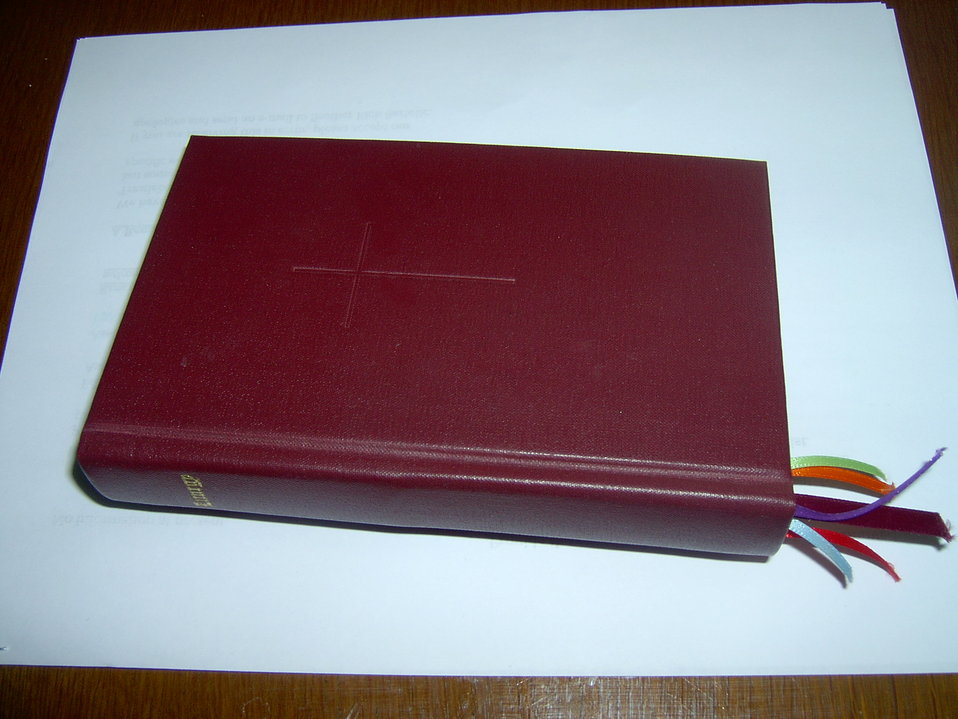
LCCI liturgy book